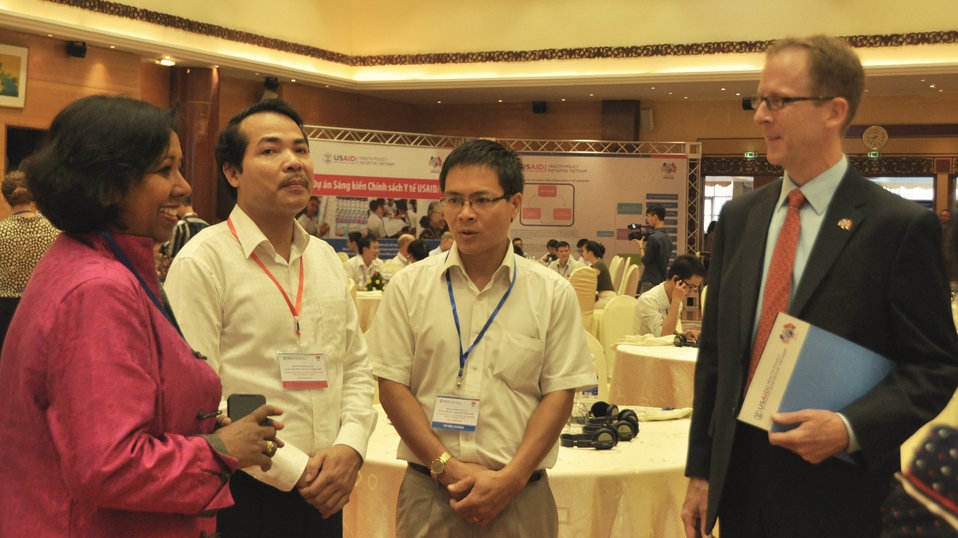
USAID Health Policy Initiative End of Project Workshop

Hanoi, August 14, 2013.